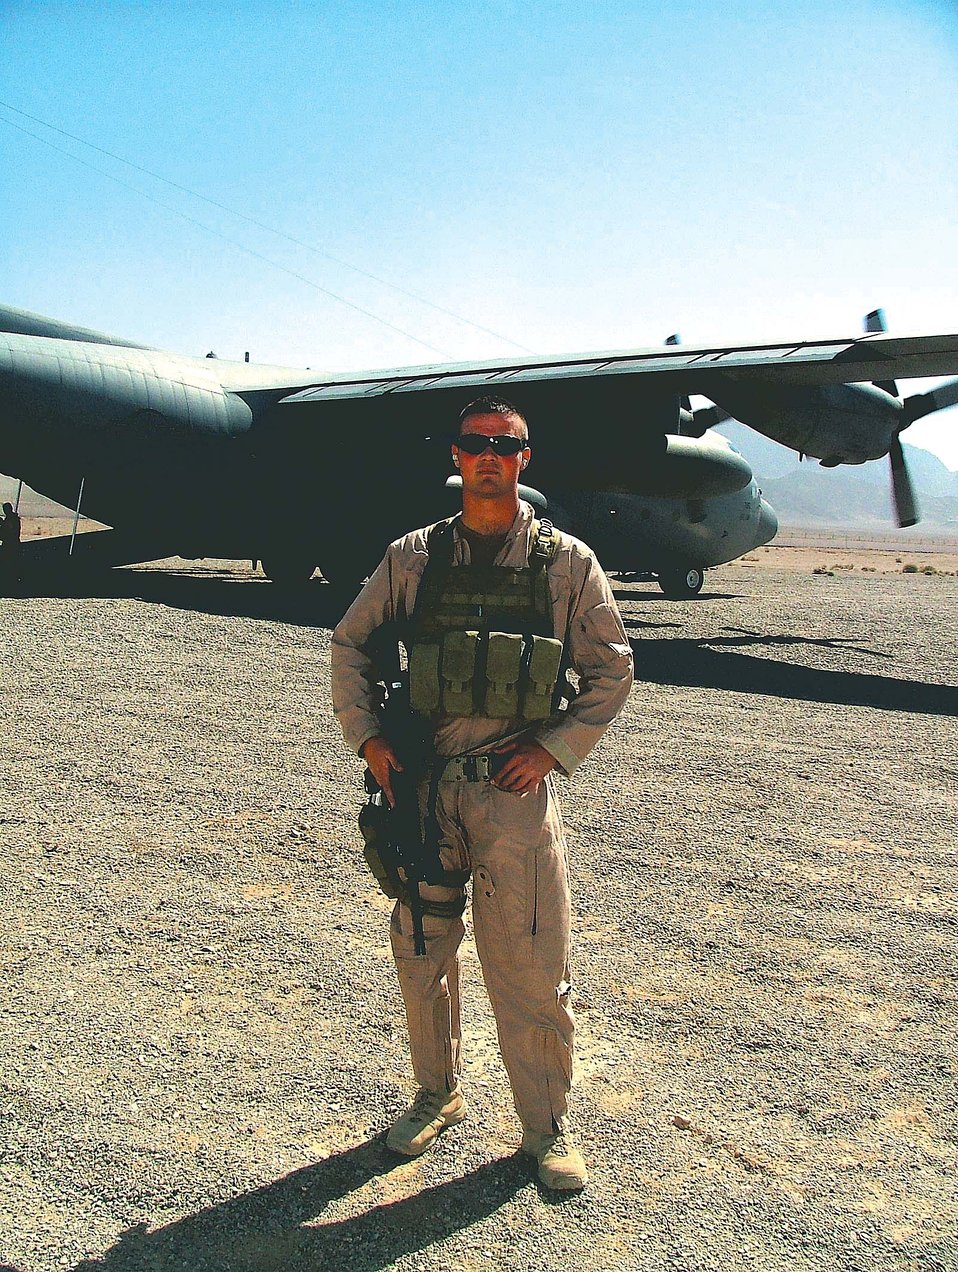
Ellsworth cops take to the skies

Senior Airman Kyle Battell secures an avenue of approach from potential adversaries for a C-130 Hercules Nov. 19 in Afghanistan. Airman Battell is one of nine security forces members from Ellsworth Air Force Base, S.D., who received fly away security team training prior to deploying. This aircraft is off loading cargo at an undisclosed location in Afghanistan. Airman Battell is deployed from the 28th Security Forces Squadron at Ellsworth AFB.